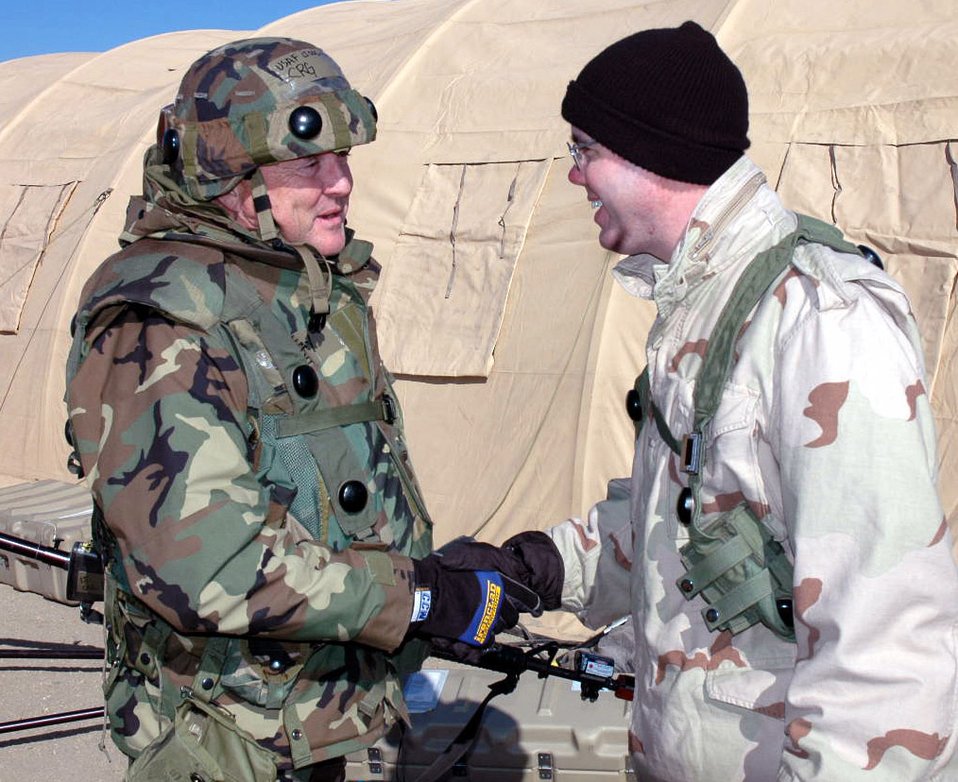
Eagle Flag role players: Airmen helping Airmen

Airmen deployed as part of